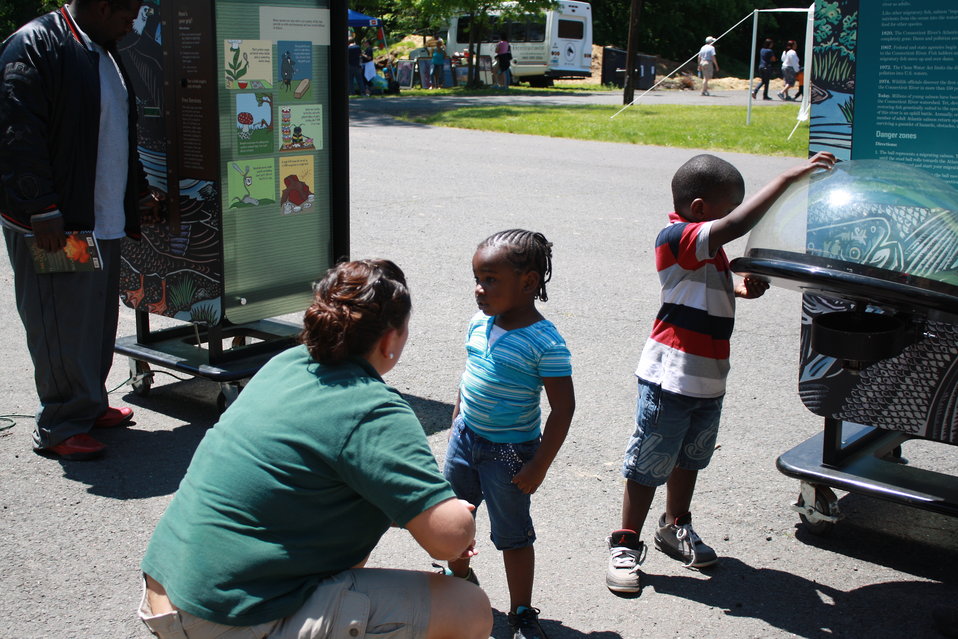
Talking about the WOW Express

WOW Express at Keney Park in Hartford, Conn.